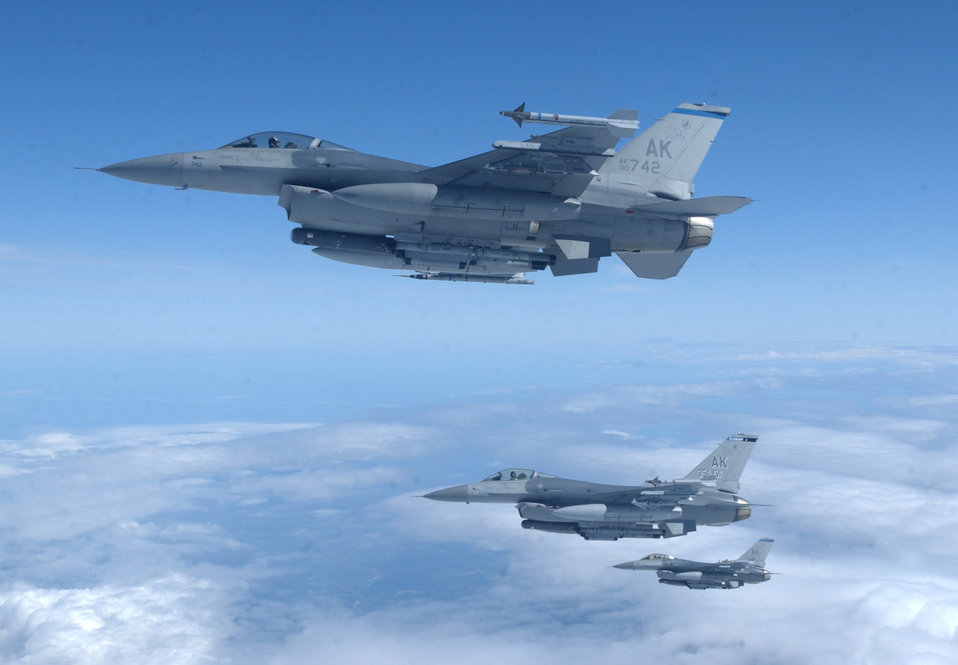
A formation of falcons

OVER EIELSON AIR FORCE BASE, Alaska -- Three F-16 Fighting Falcons from the 18th Fighter Squadron fly in formation during a refueling mission in support of exercise Northern Edge '04 on June 11. Northern Edge '04 is Alaska command's annual joint-training exercise to improve joint operations techniques and procedures.